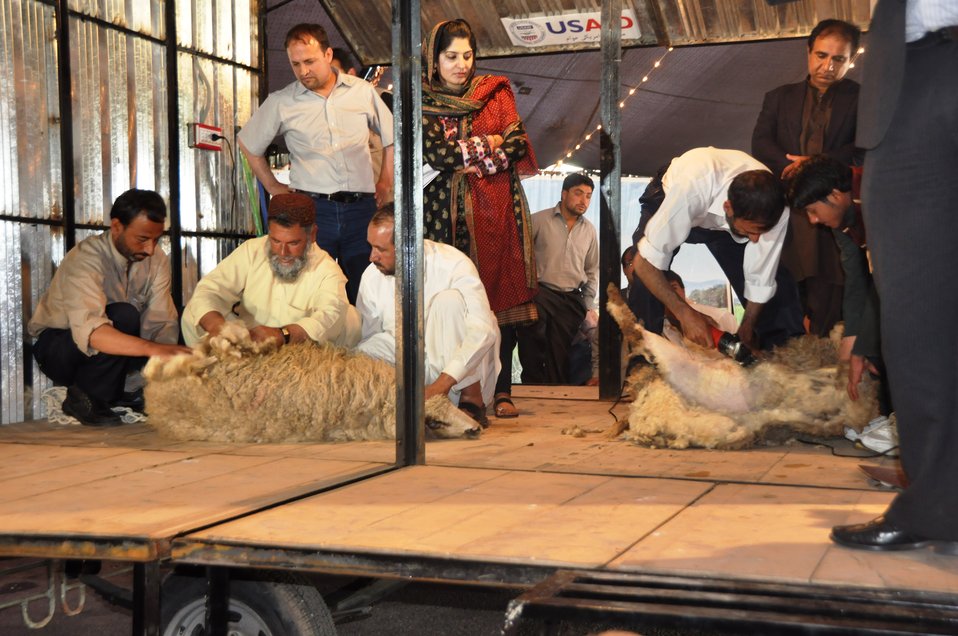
Photo 1-A demonstration in a USAID-sponsored mobile shearing shed